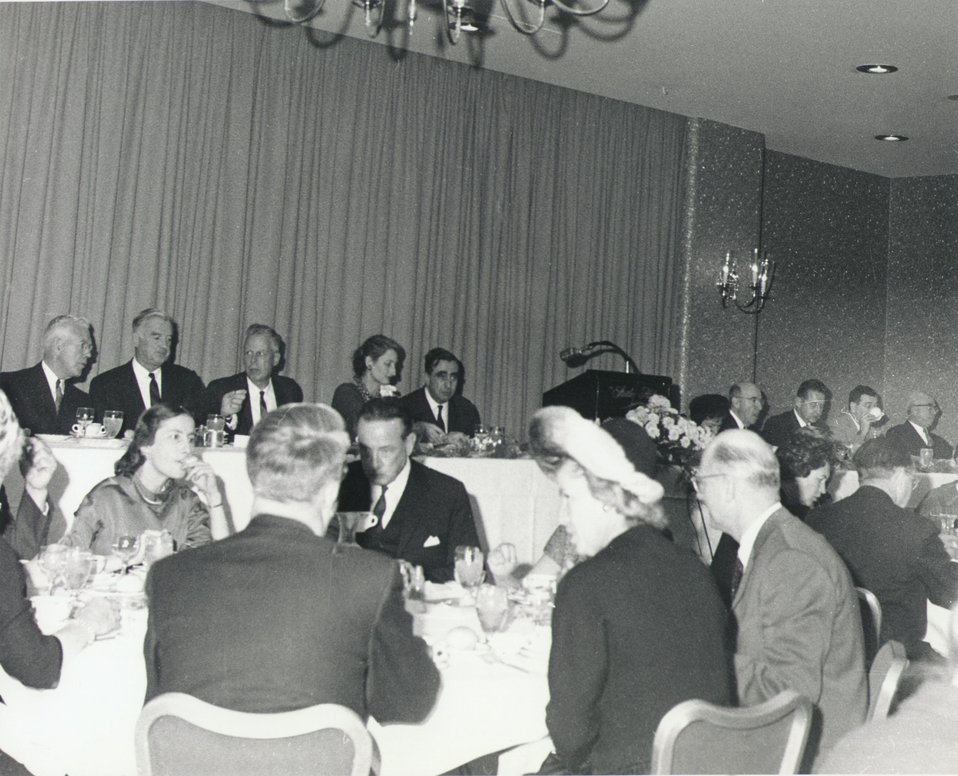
Fermi Award Ceremony for Teller in 1962.